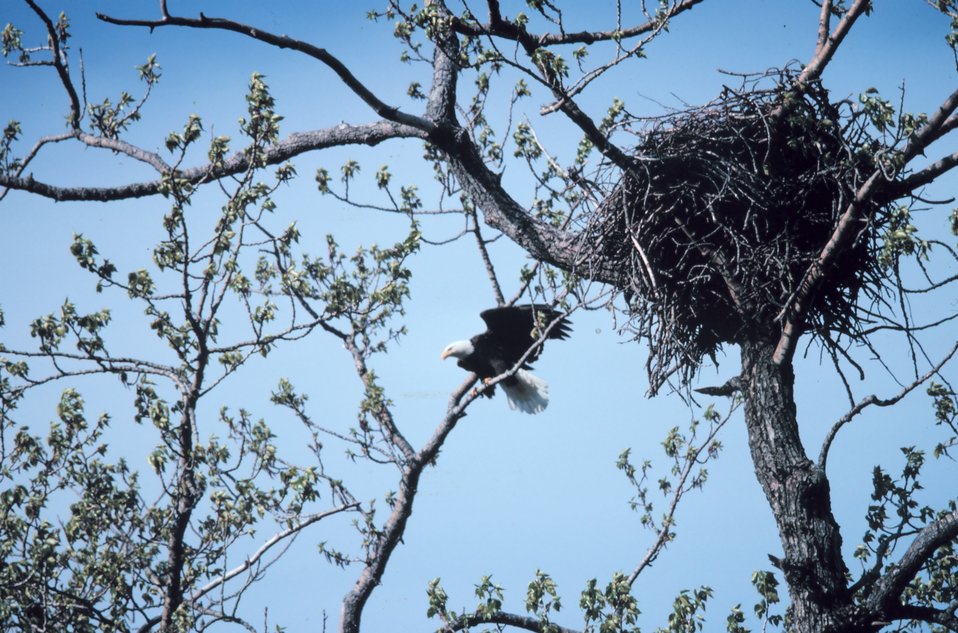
Bald Eagle - Haliaeetus leucocephalus.